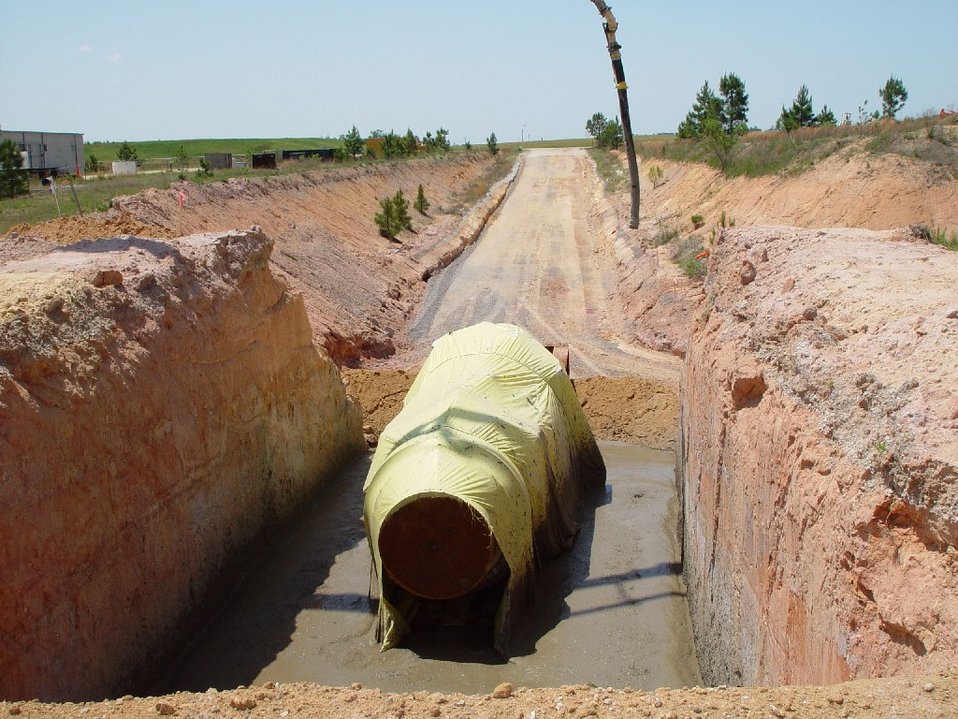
HWCTR PV Disposal, 4-19-11

Recovery Act workers removed the Heavy Water Components Test Reactor vessel, shown here, and permanently disposed it onsite.